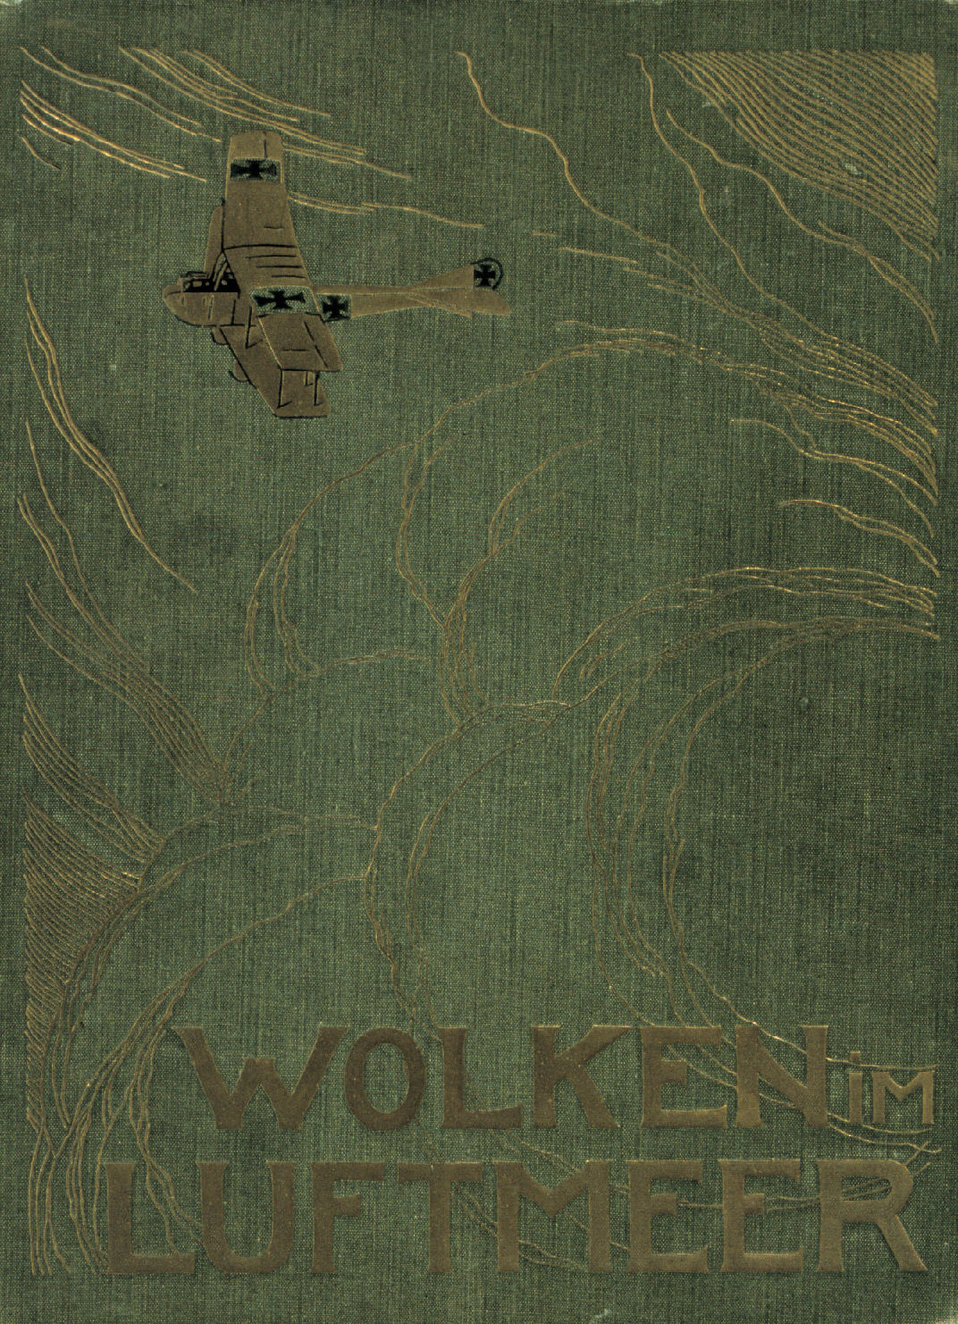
The cover of 'Wolken im Luftmeer' The embossed cover of a German cloud atlas produced for the German Air Forces. Library Call No. QC923 .W65 1917 .